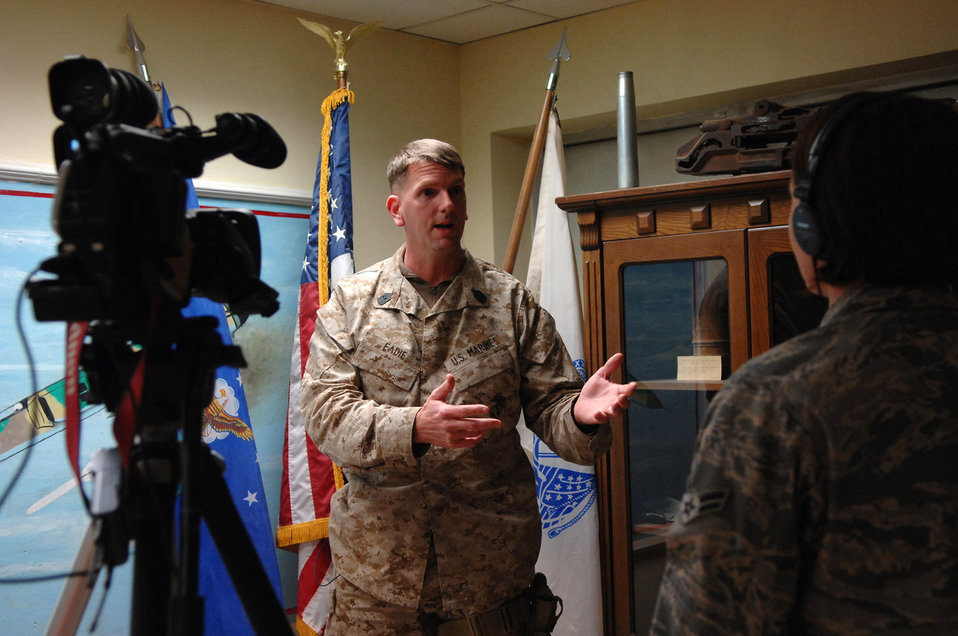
Airmen, Marines seek to integrate, synchronize in skies over Iraq

Airman 1st Class April Mullens interviews Master Gunnery Sgt. Mark Eadie about the importance of increasing the integration and synchronization of military airpower as well as civil air traffic between Air Force and Marine assets here, Feb. 10. Airman Mullens, is a videographer with the 332nd Air Expeditionary Wing Public Affairs Office. Sergeant Eadie is the Marine Air Control Squadron 1, Tactical Air Operations Center chief,